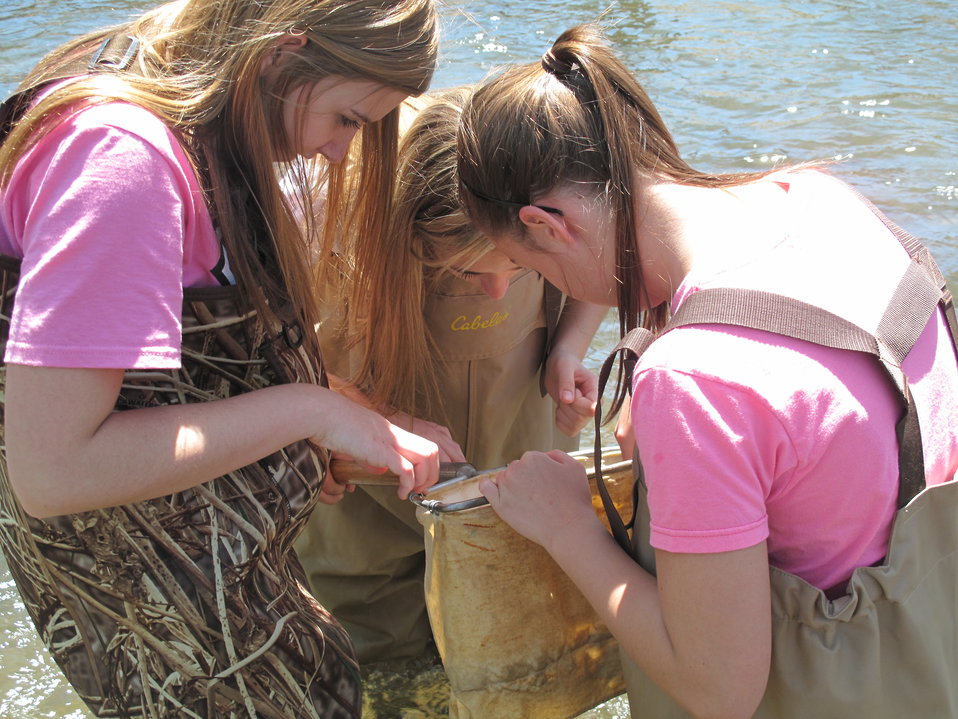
Students looking into a D-net

Over the course of four days in late April 2014, every eighth grade student at North Carolina’s Macon Middle School, Highlands School, Nantahala School, and Trimont Christian Academy visited Cartoogechaye Park, in Macon County, to learn about rivers.

The students rotated through four stations:
1) water chemistry where they had the opportunity to help test water from Cartoogechaye Creek to gain an idea of the stream’s water quality;
2) aquatic insects, where students collected and identified animals like mayflies and caddisflies, learning how life in the river reflects the health of the river
3) fish, where they were able to collect and identify fish in the stream, and then
4) stream flow, where they measured and calculated the downstream movement of water, including the velocity of the water and the total volume of water being moved per second.

The event was organized by the University of Georgia's Coweeta Long-Term Ecological Research (LTER) Program, which is based at the USFS Coweeta Hydrologic Laboratory. (coweeta.uga.edu/), with sizable support from the Land Trust for the Little Tennessee. Other supporters include the U.S. Fish and Wildlife Service, N.C. Natural Heritage Program, and N.C. Division of Water Resources.